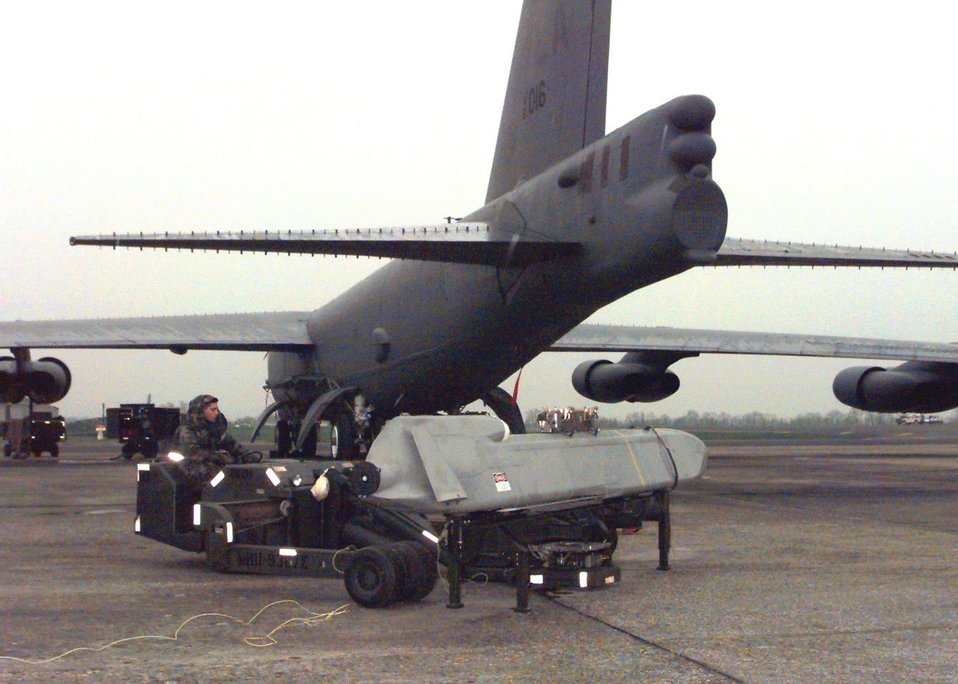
Buff cruise missile

AROYAL AIR FORCE FAIRFORD, England -- An airman secures an Air Launch Cruise Missile during a maintenance inspection aboard a B-52H Stratofortress here Mar. 25, 1999. He is assigned to the 20th Bomb Wing, Barksdale Air Force Base, La., and is deployed to RAF Fairford in support of the 2d Air Expeditionary Group's involvement in NATO Operation Allied Force.
990325-f-3588h-002-003